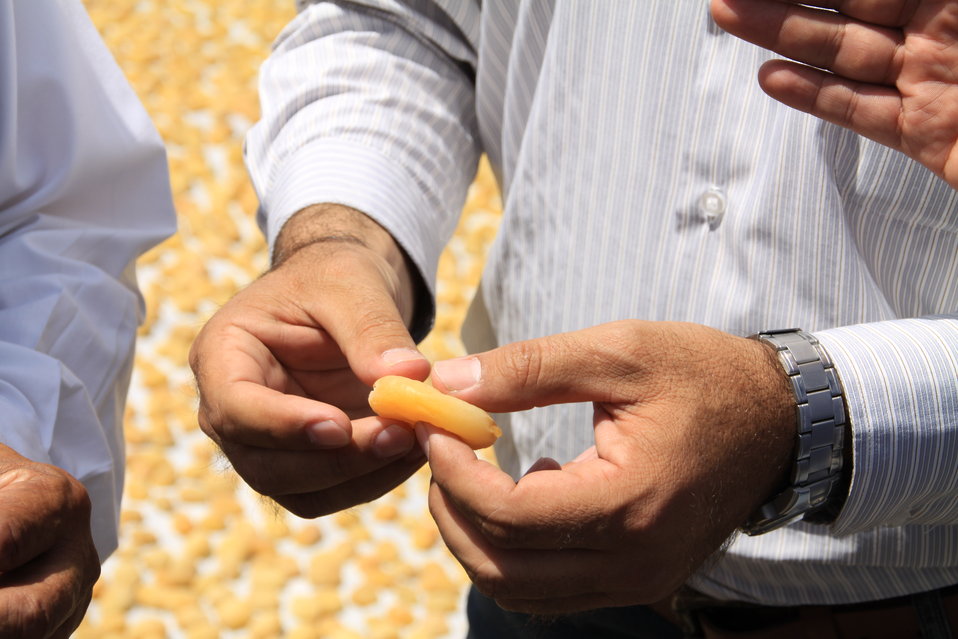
Badam Bagh Farm